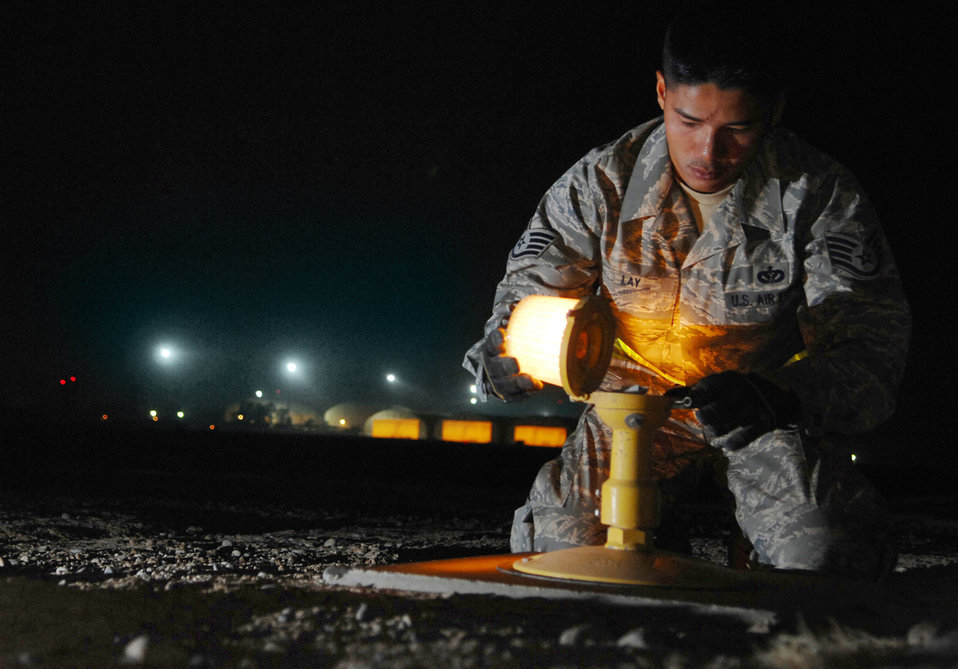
Lighting the way

Staff Sgt. Samnang Lay replaces the bulb on a runway edge light July 5 at Joint Base Balad, Iraq. The airfield lights safely guide aircraft during taxi, take off and landing in inclement weather and nighttime operations.